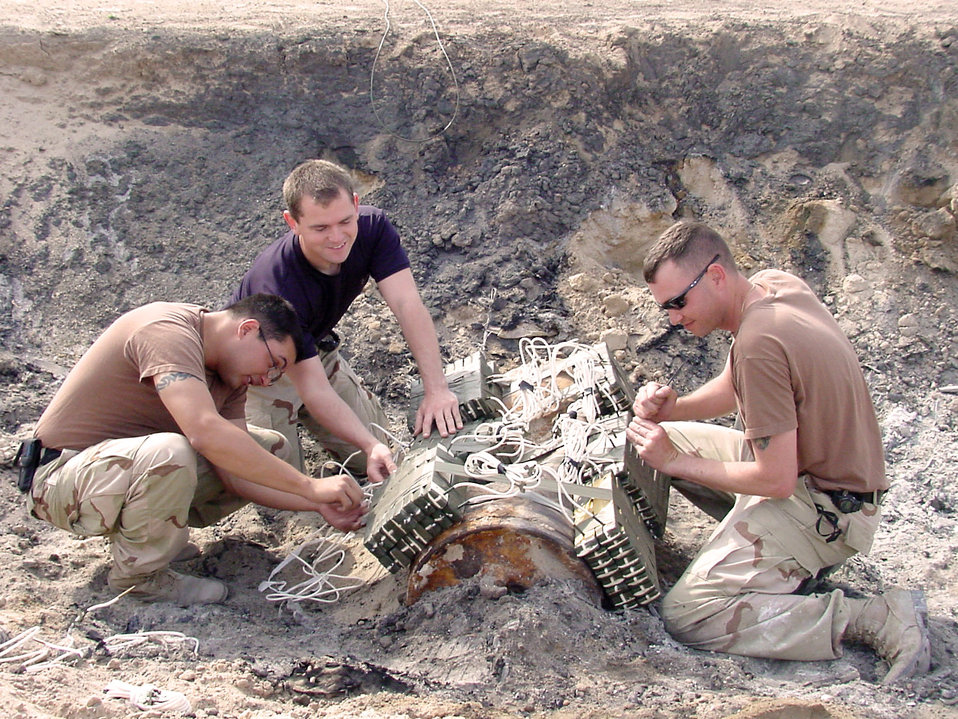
Airman finds, destroys UXO

SOUTHWEST ASIA -- Staff Sgts. Jason Wilburn, Joseph Leslie and Brad Ferguson prepare to detonate a Russian-made bomb that was discovered by an Airman at a construction site at a forward-deployed location. They are assigned to the 386th Expeditionary Civil Engineer Squadron's explosive ordnance flight.